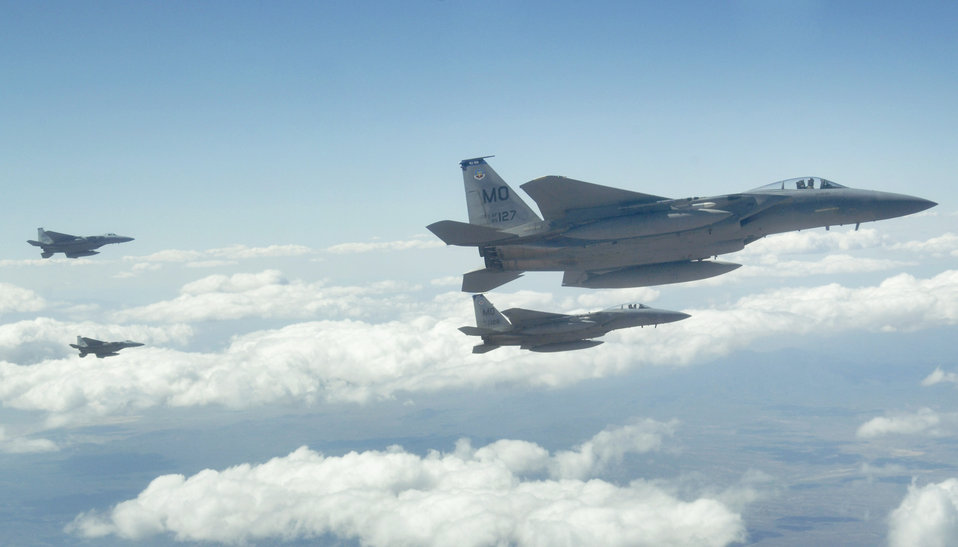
Realistic training with Red Flag

Four F-15 Eagles from Mountain Home Air Force Base, Idaho, head out to the Nevada Test and Training Range July 17 during Red Flag 09-4. Red Flag is conducted on the 15,000-square-mile range north of Las Vegas. The exercise is one of a series of advanced training programs administered by the U.S. Air Force Warfare Center and Nellis AFB.